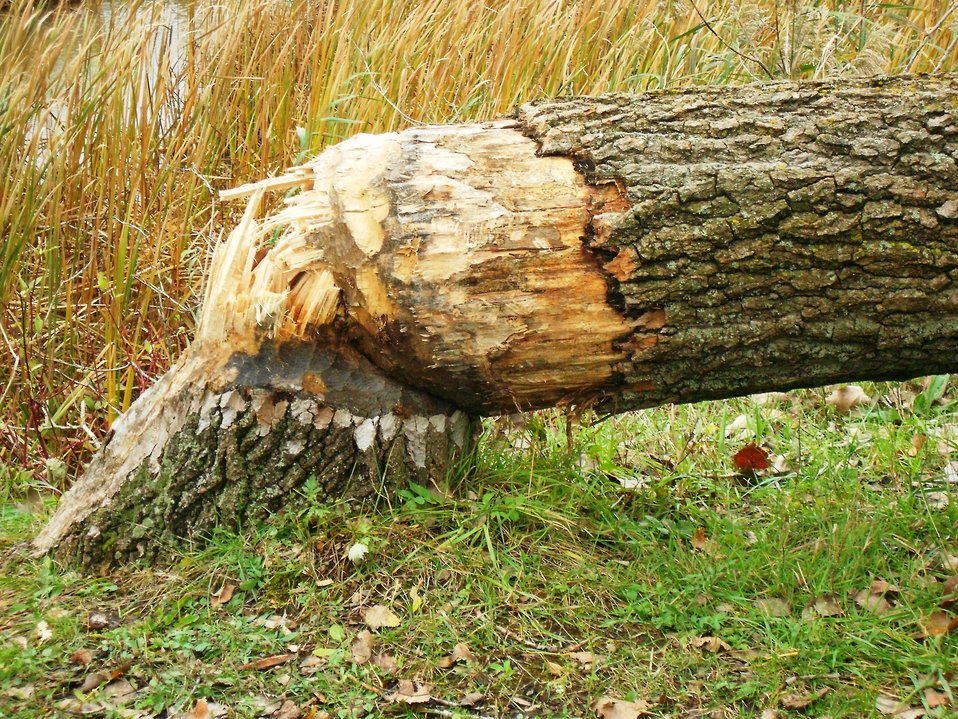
Tree cut down by a beaver at Tifft Nature Preserve

A beaver-cut tree